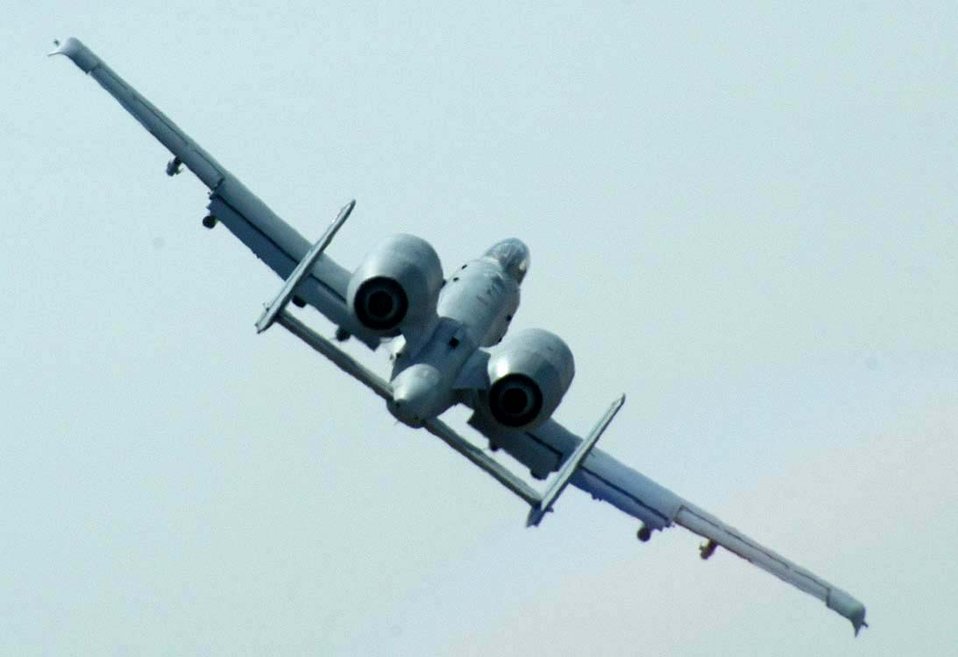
Thundrbolt sortie

1990's -- BAGRAM AIR BASE, Afghanistan -- An A-10 Thunderbolt II assigned to the 104th Expeditionary Fighter Squadron banks to the right after take off. Coalition forces in Afghanistan launched another offensive, dubbed Operation Valiant Strike, on March 20, aimed at villages and cave complexes east of Kandahar in the Sami Ghar mountains, defense officials said. A-10 pilots provide close air support for Army forces here.